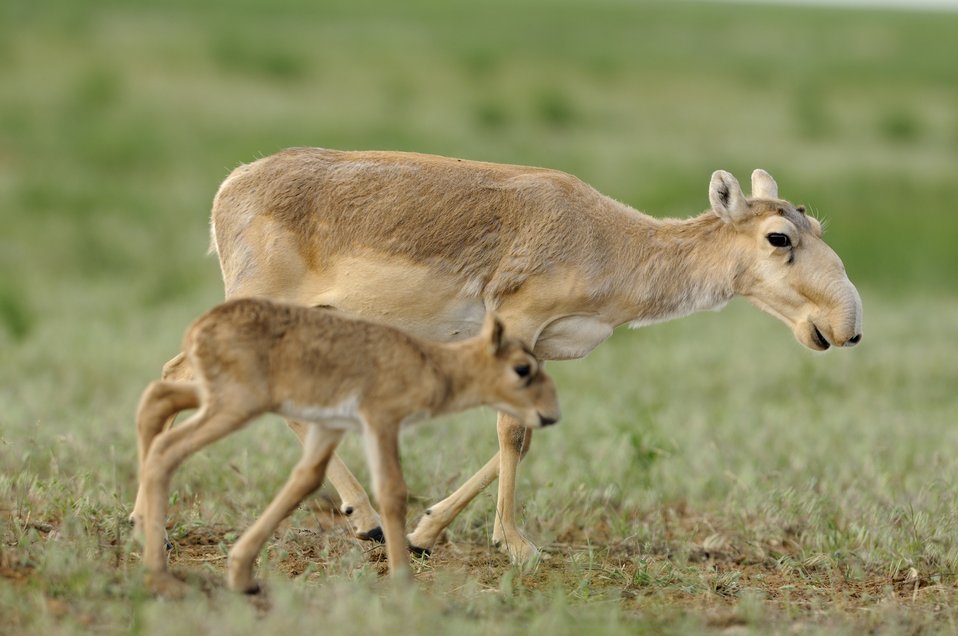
Saiga Igor Shpilenok

Mother saiga and calf in the steppe in Cherniye Zemly (Black Earth) Nature Reserve, Kalmykia, Russia.